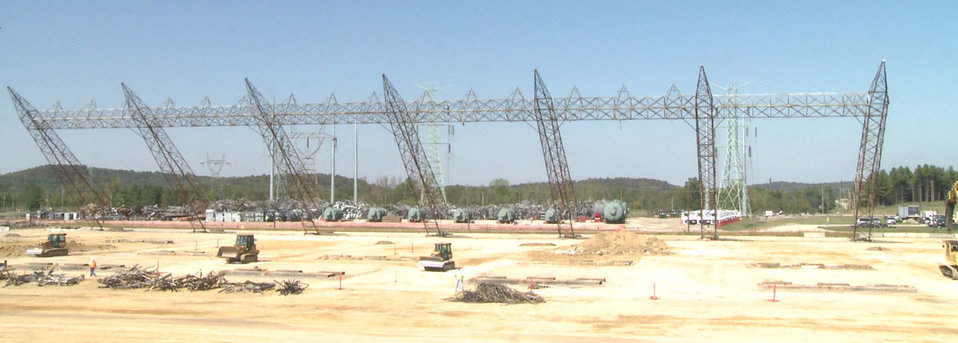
Portsmouth Skyline Changes with Completion of Recovery Act Projects

The last seven 120-foot tall towers are dropped all at once at the X-533 Electrical Switchyard in late September 2010.